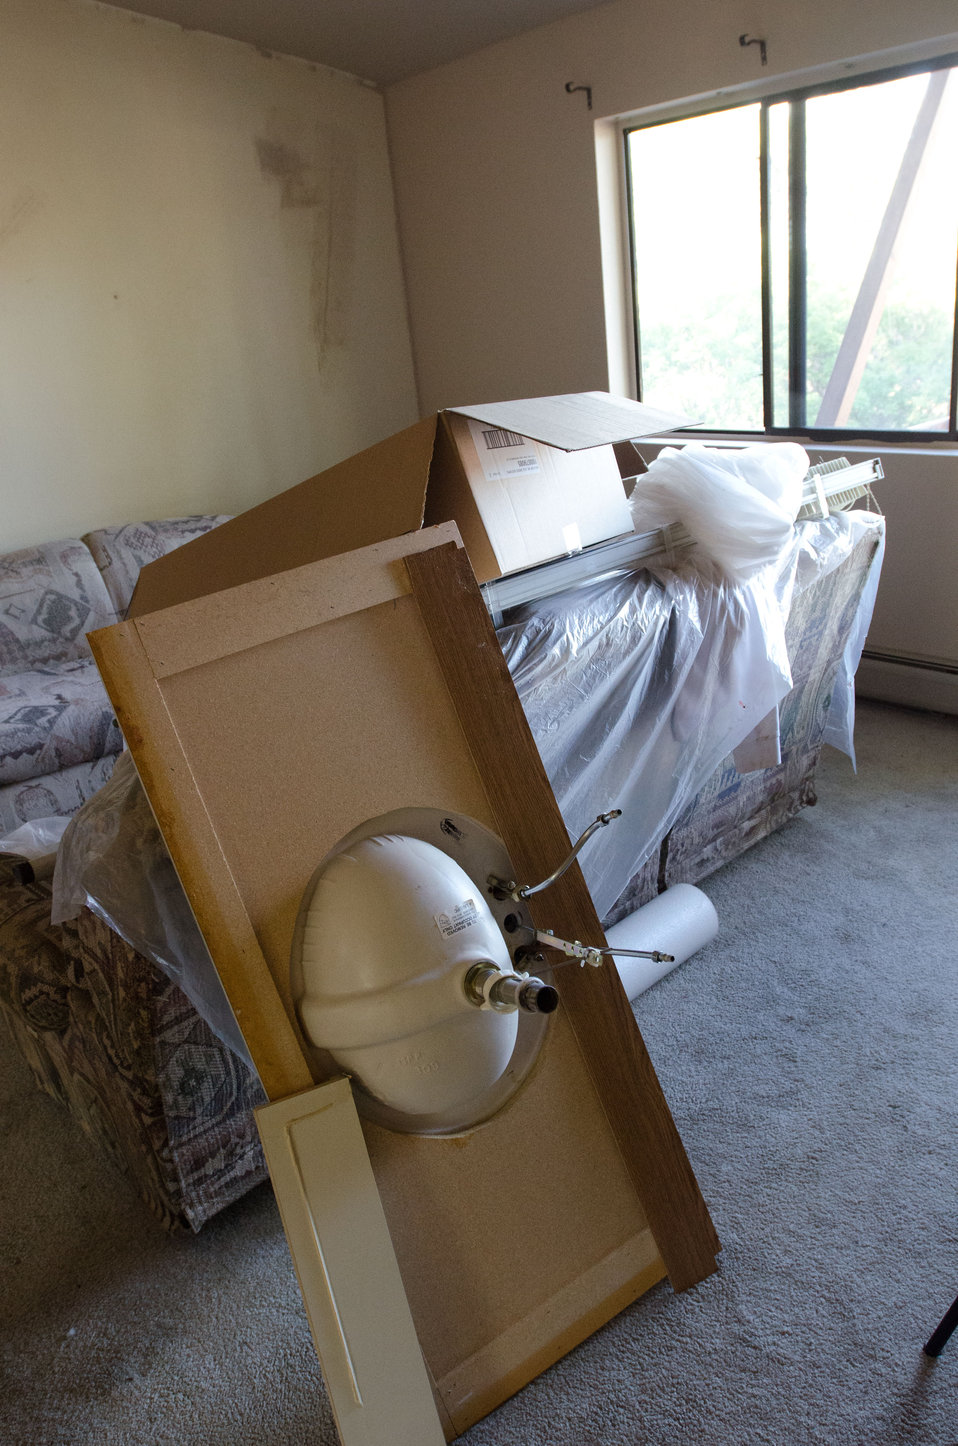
Colorado native and business owner Bruce Longwell protects his furniture and set his bathroom counter and sink, during the first week of painting and bathroom renovation in his Durango, CO home on July 17, 2012. Mr. Longwell financed the single-family house with a U.S. Department of Agriculture (USDA) Rural Development (RD) Housing Assistance loan. This provided lower monthly payments than his prior rental home. Homeownership provides potential gains through home equity.